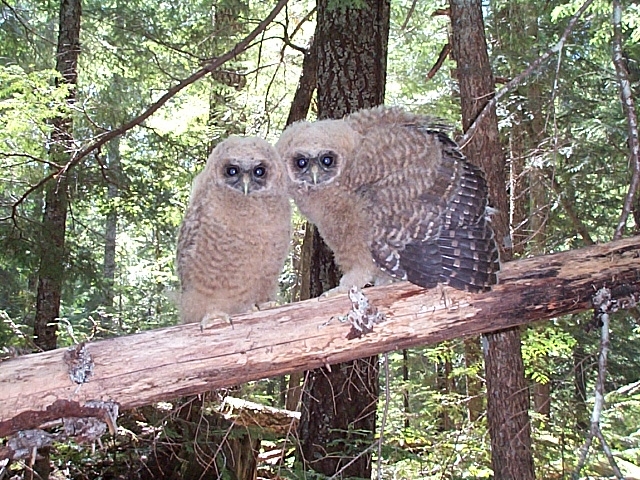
Threat display - Spotted Owls